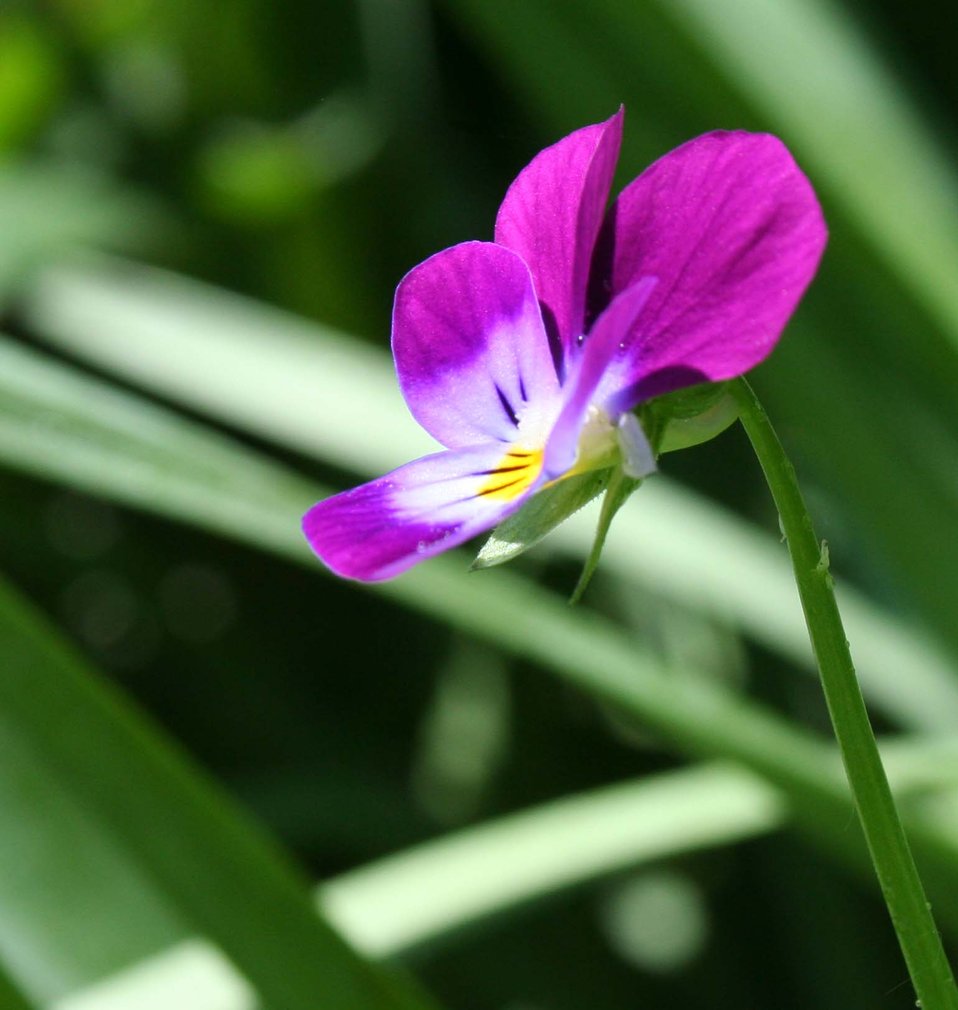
Violaceae Magyar: Ibolyafélék - Nr. 001